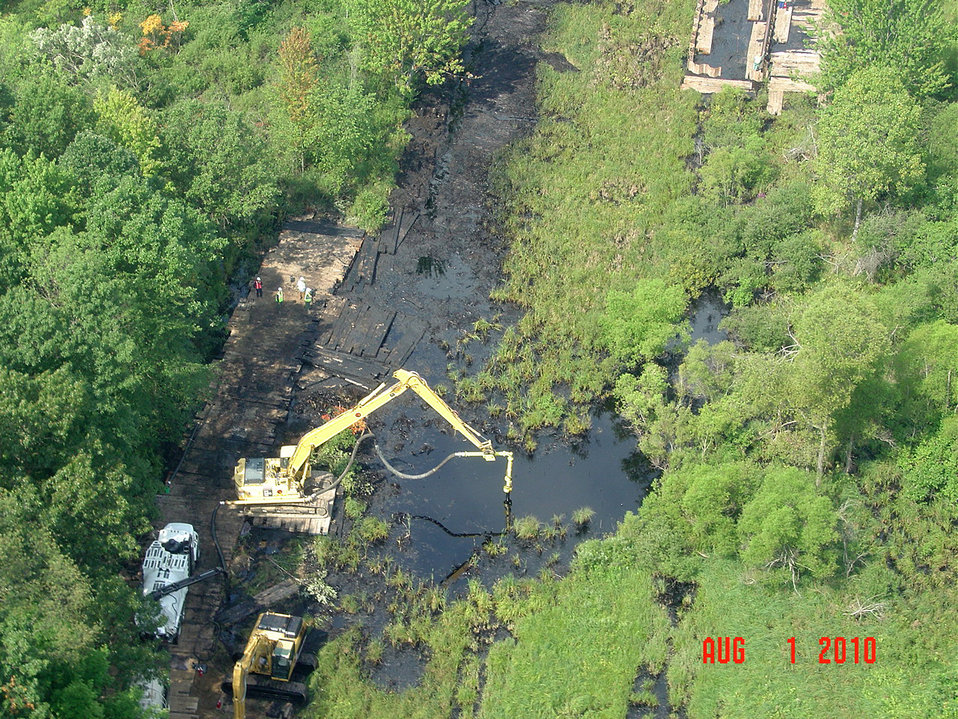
EPA's response to the Enbridge oil spill

August 1, 2010 - Response operations near the source of the spill on Talmadge Creek near the Kalamazoo River.